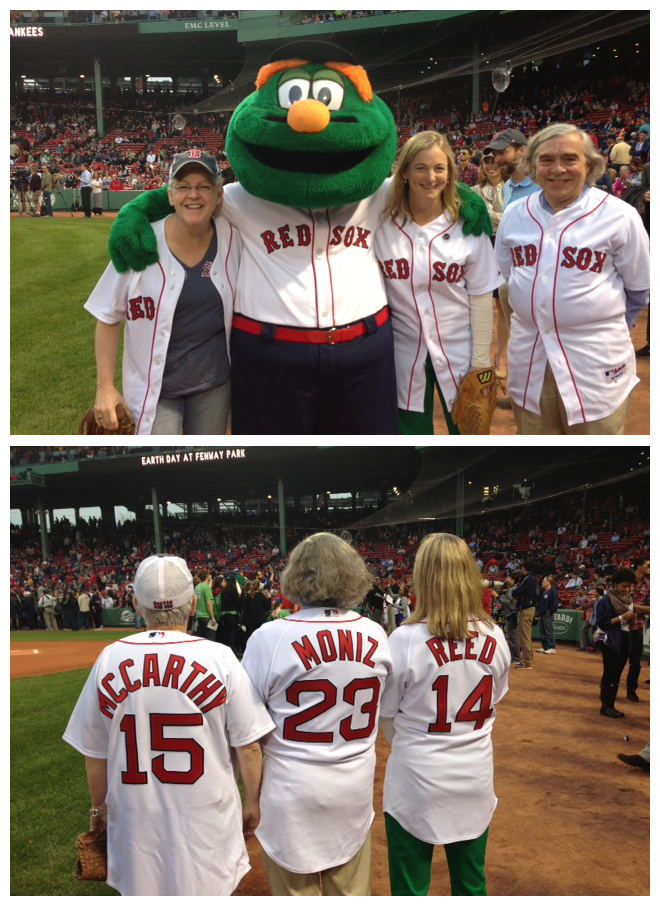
Administrator McCarthy, Department of Energy Secretary Moniz, and National Grid Massachusetts President Reed at Fenway Park

Administrator Gina McCarthy with Department of Energy Secretary Ernest Moniz and National Grid Massachusetts President Marcy Reed getting ready to throw out the first pitch at Fenway Park in Boston to celebrate Earth Day. In the spirit of the day, the game was carbon neutral. Thanks to the Boston Red Sox for their work to #ActOnClimate.